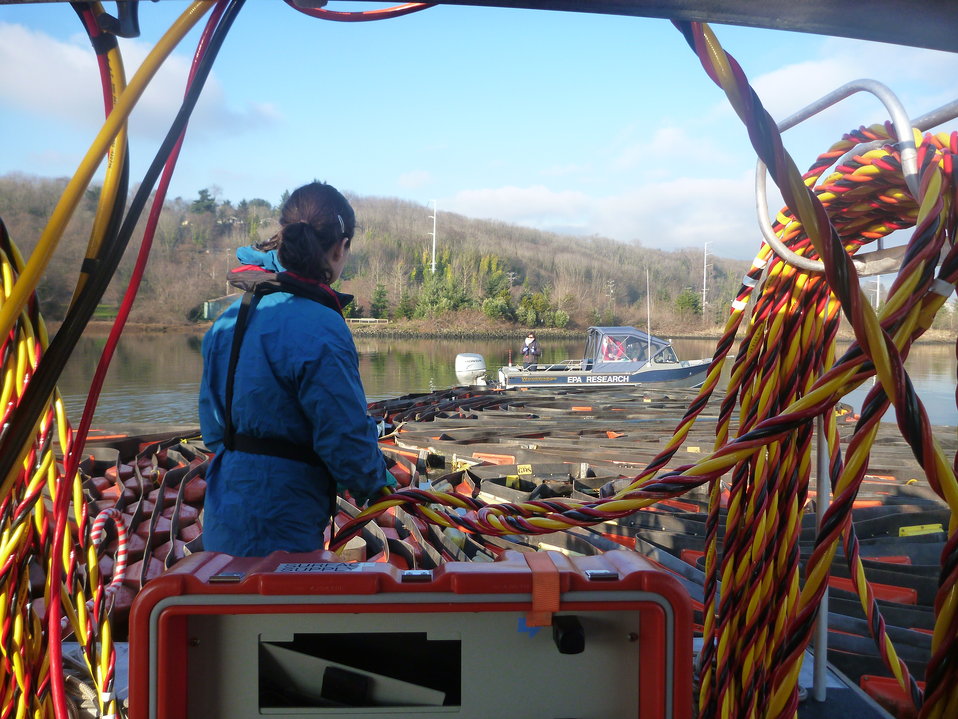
January 15, 2013 - Carefully tending to surface supplied diver

Underwater, an EPA diver was working to retrieve samples from the bottom of the Duwamish River. Those lines you see in red, black, and yellow, are their lifelines connecting them to air at the surface.

Working with surface supplied air, instead of scuba tanks, allows for more time to work safely underwater.

Lower Duwamish Waterway Superfund Site

More about this sampling event

To find out more about EPA diving nationally, visit: www.facebook.com/EPAdivers